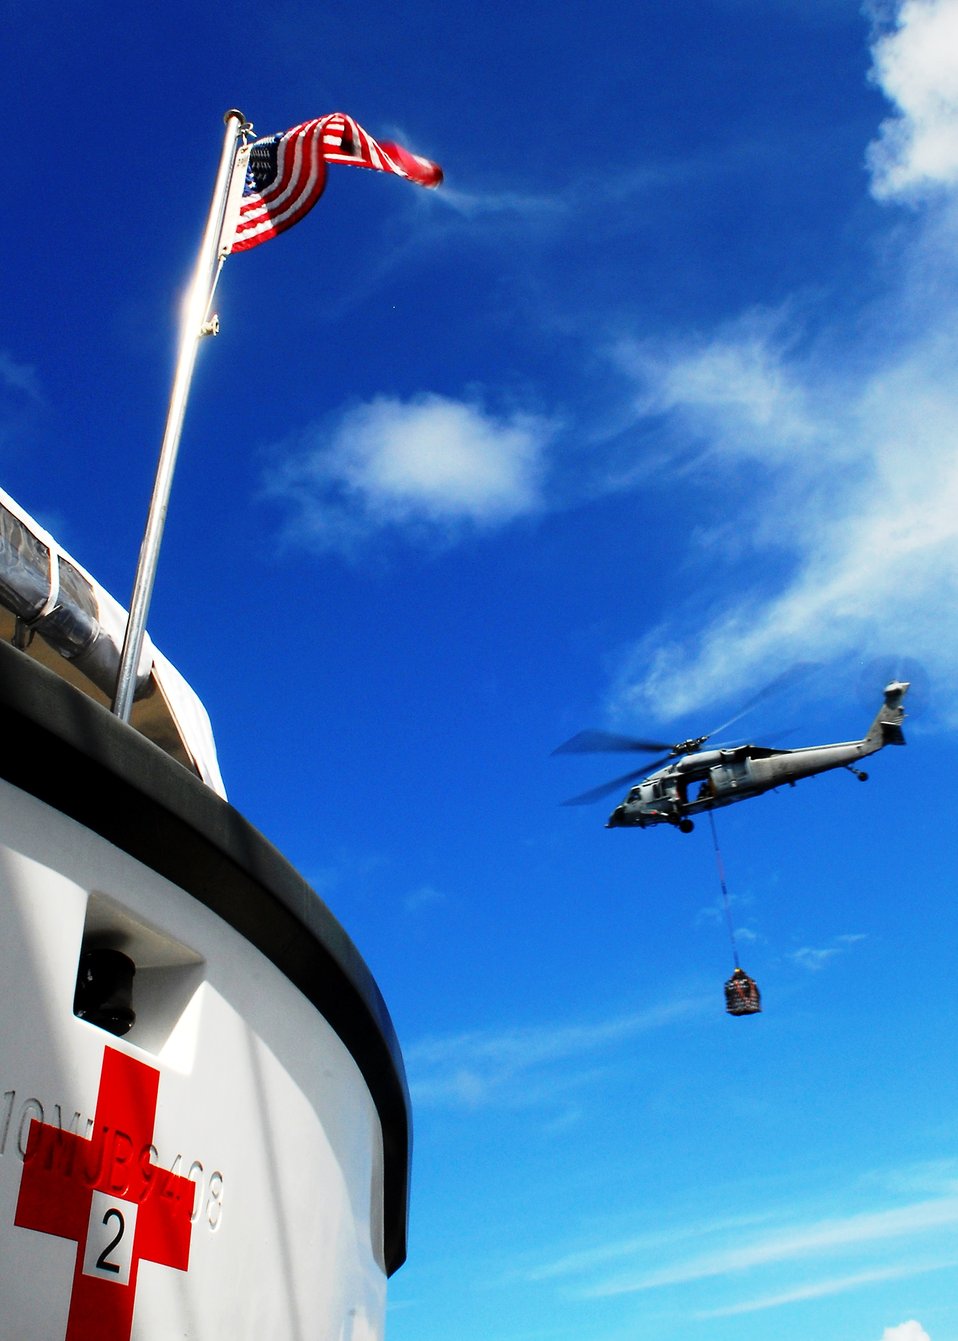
An MH-60S Knighthawk Helicopter Conducts a Vertical Replenishment (VERTREP) With Dry Cargo/ Ammunition Ship USNS Richard E. Byrd (T-AKE 4)

An MH-60S Knighthawk helicopter from Helicopter Combat Squadron 23 “Wild Cards” transports a pallet of supplies to the Military Sealift Command hospital ship USNS Mercy (T-AH 19) during a vertical replenishment (VERTREP) with Dry Cargo/ Ammunition Ship USNS Richard E. Byrd (T-AKE 4) on July 11, 2010. Mercy is conducting Pacific Partnership 2010, the fifth in a series of annual U.S. Pacific Fleet humanitarian and civic assistance endeavors to strengthen regional partnerships.